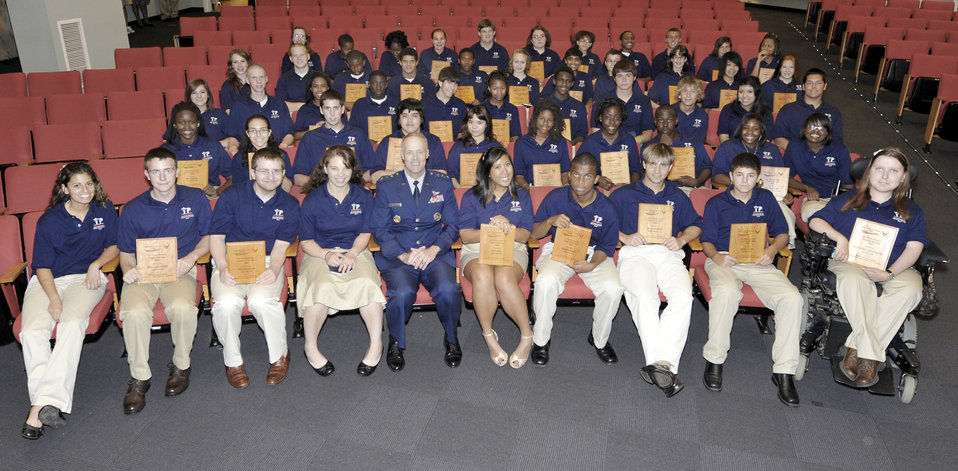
Air Force Honors youth

Lt. Gen. Richard Newton hosts the Youth of the Year Awards June 23, 2010, at a Pentagon ceremony. The ceremony honored 63 teenagers from throughout the Air Force. General Newton is the deputy chief of staff for manpower and personnel.